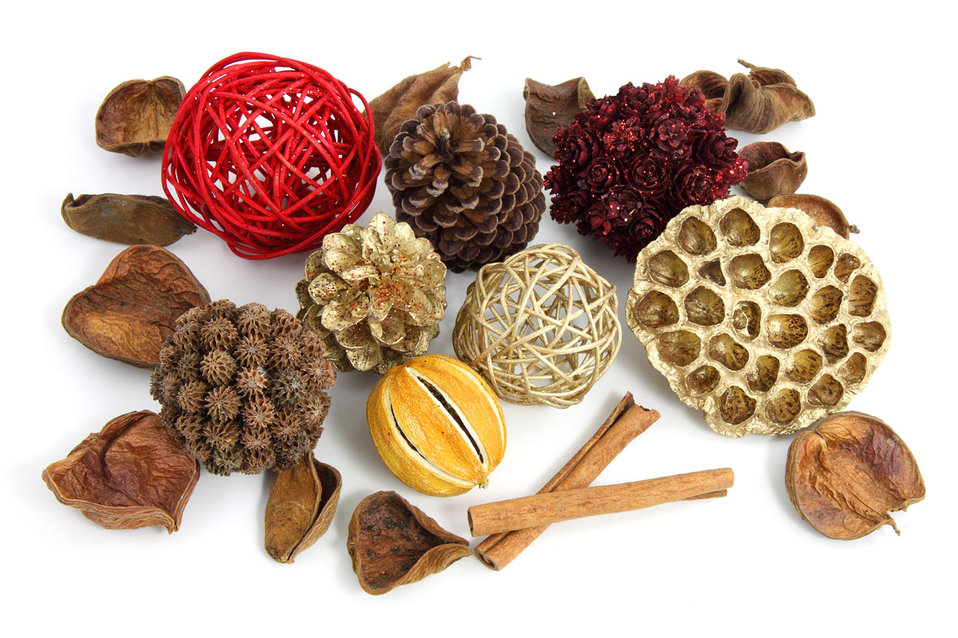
Pot pourri

Christmas pot pourri decoration on white background.